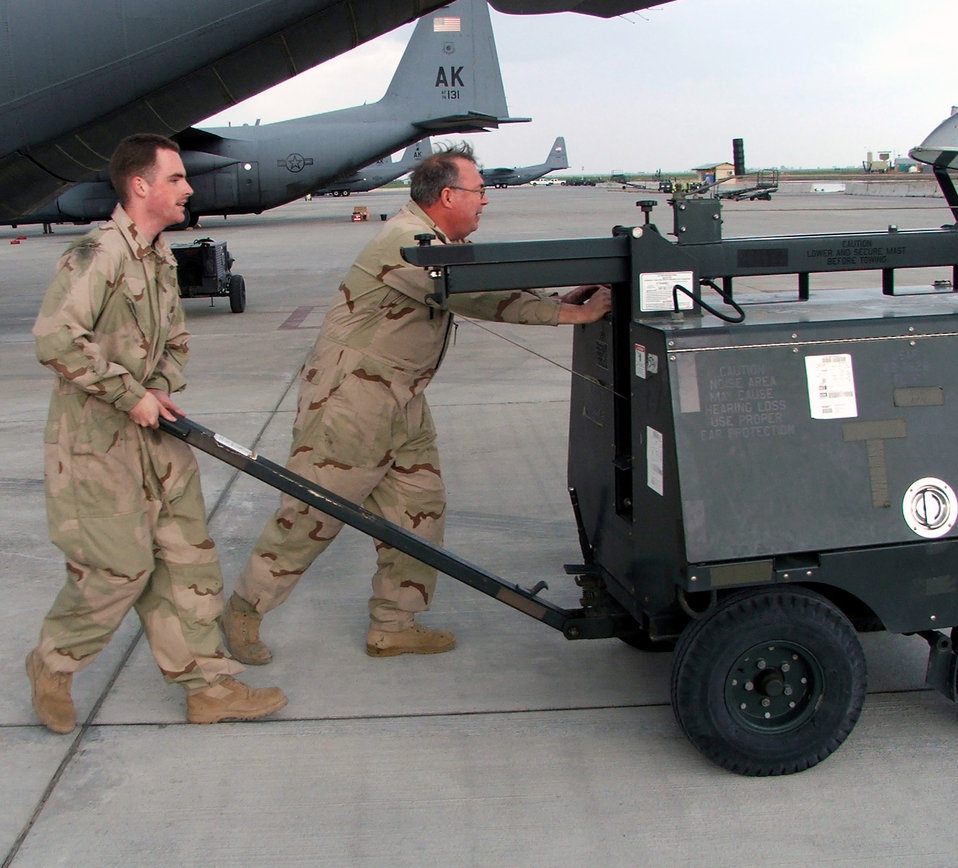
C-130 maintainers keep mission-capable rates high

KARSHI-KHANABAD AIR BASE, Uzbekistan -- Senior Airman Shawn Younger (left) and Staff Sgt. David Baker move a portable flood light while working on a C-130 Hercules here April 8. Airman Younger is a C-130 crew chief deployed from Elmendorf Air Force Base, Alaska. Sergeant Baker is a C-130 metals fabrication craftsman with the 774th Expeditionary Airlift Squadron and is deployed from the West Virginia Air National Guard at Charleston.